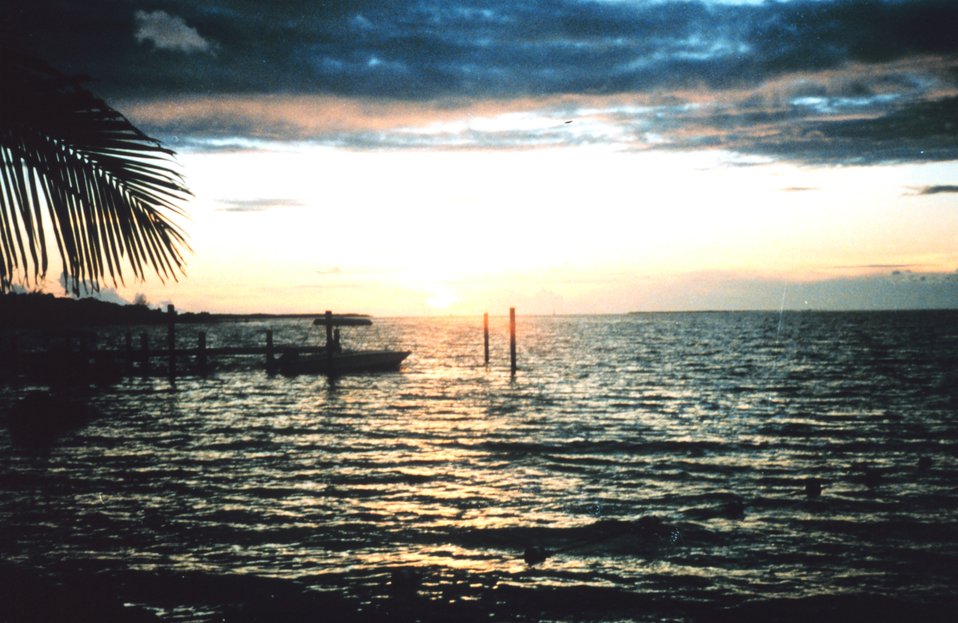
Sunset near Hollywood, Florida